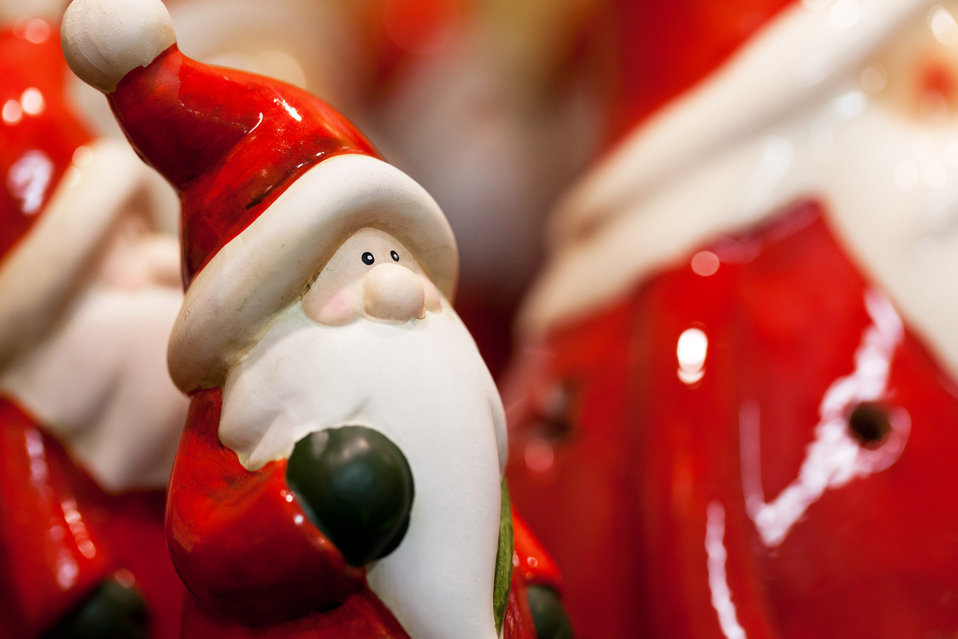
Jolly santa claus

Santa claus figure.